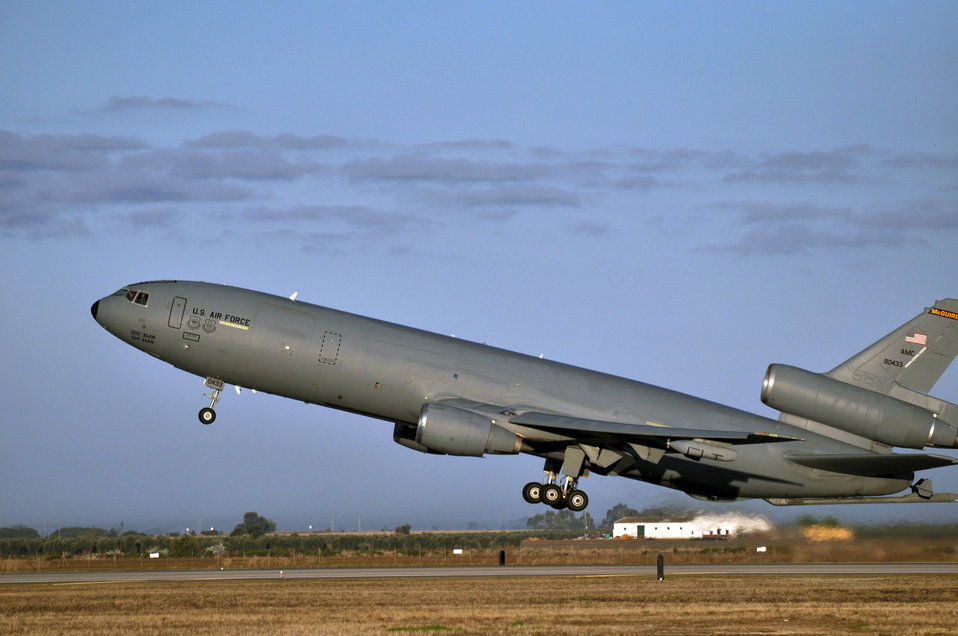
Skyward bound

A KC-10 Extender takes off Nov. 18, 2011, from the Europe. The KC-10, from Joint Base McGuire-Dix-Lakehurst, N.J., was assigned to the 313th Air Expeditionary Wing to provide air refueling assets to NATO during Operation Unified Protector.